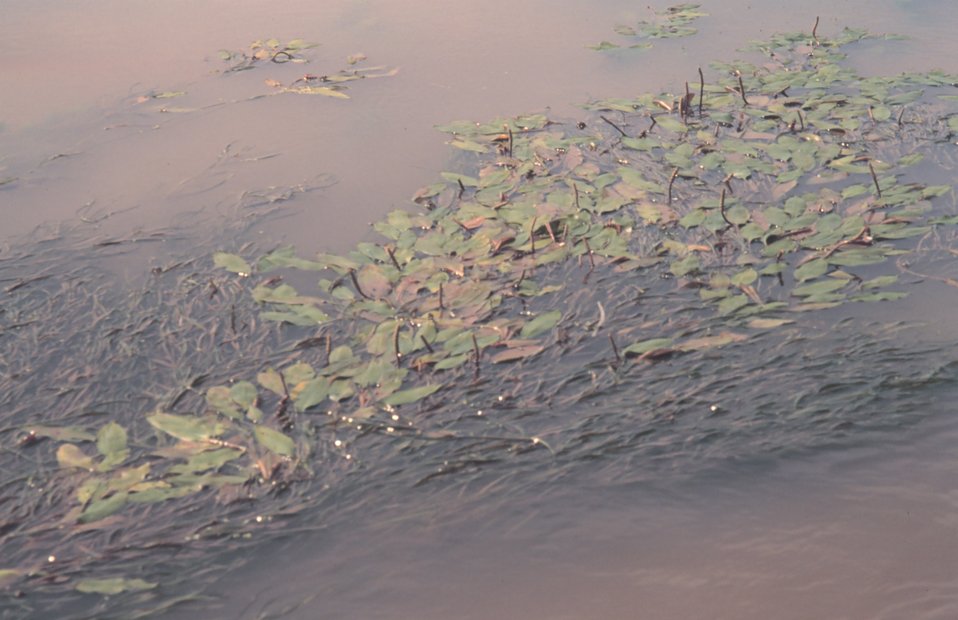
Submerged aquatic vegetation within a pond in the Mississippi Delta